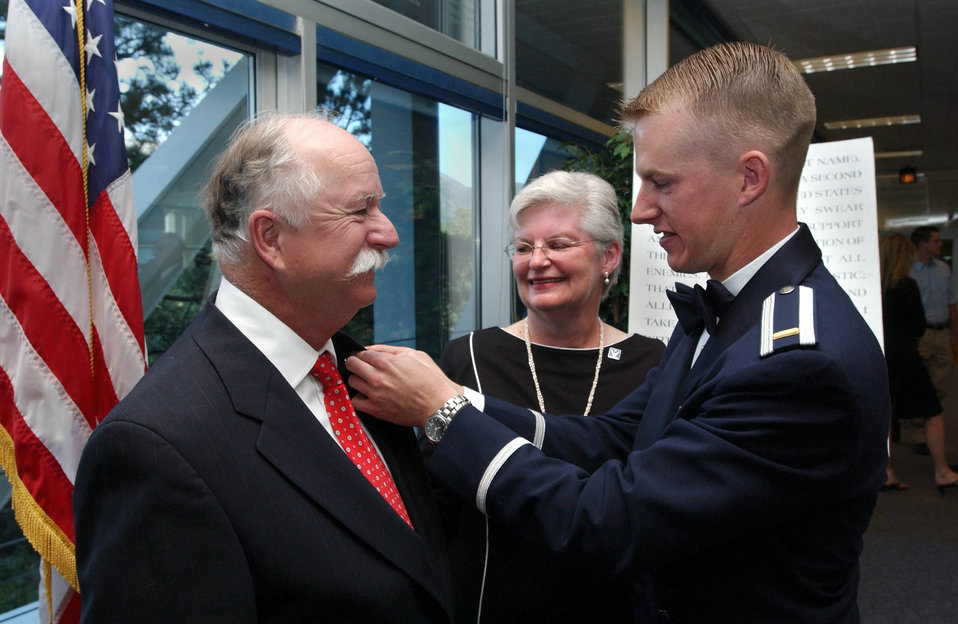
Parent pin

U.S AIR FORCE ACADEMY, Colo. -- Newly commissioned 2nd Lt. Randy Kinsey presents the Air Force Parent Pin to his parents, Cliff and Jill Kinsey of North Richland Hills, Texas. The pin was established by the Air Force to thank the parents of America's airmen for their support of their children's service. The lieutenant is one of 998 officers who were commissioned here May 28.